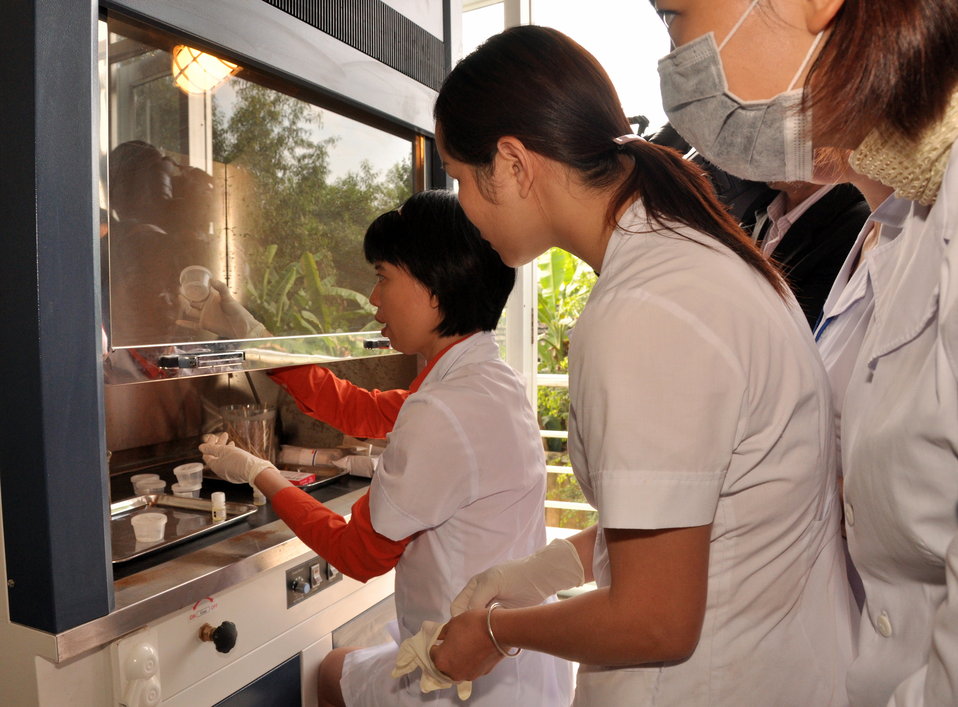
USAID supports new rapid detection TB equipment